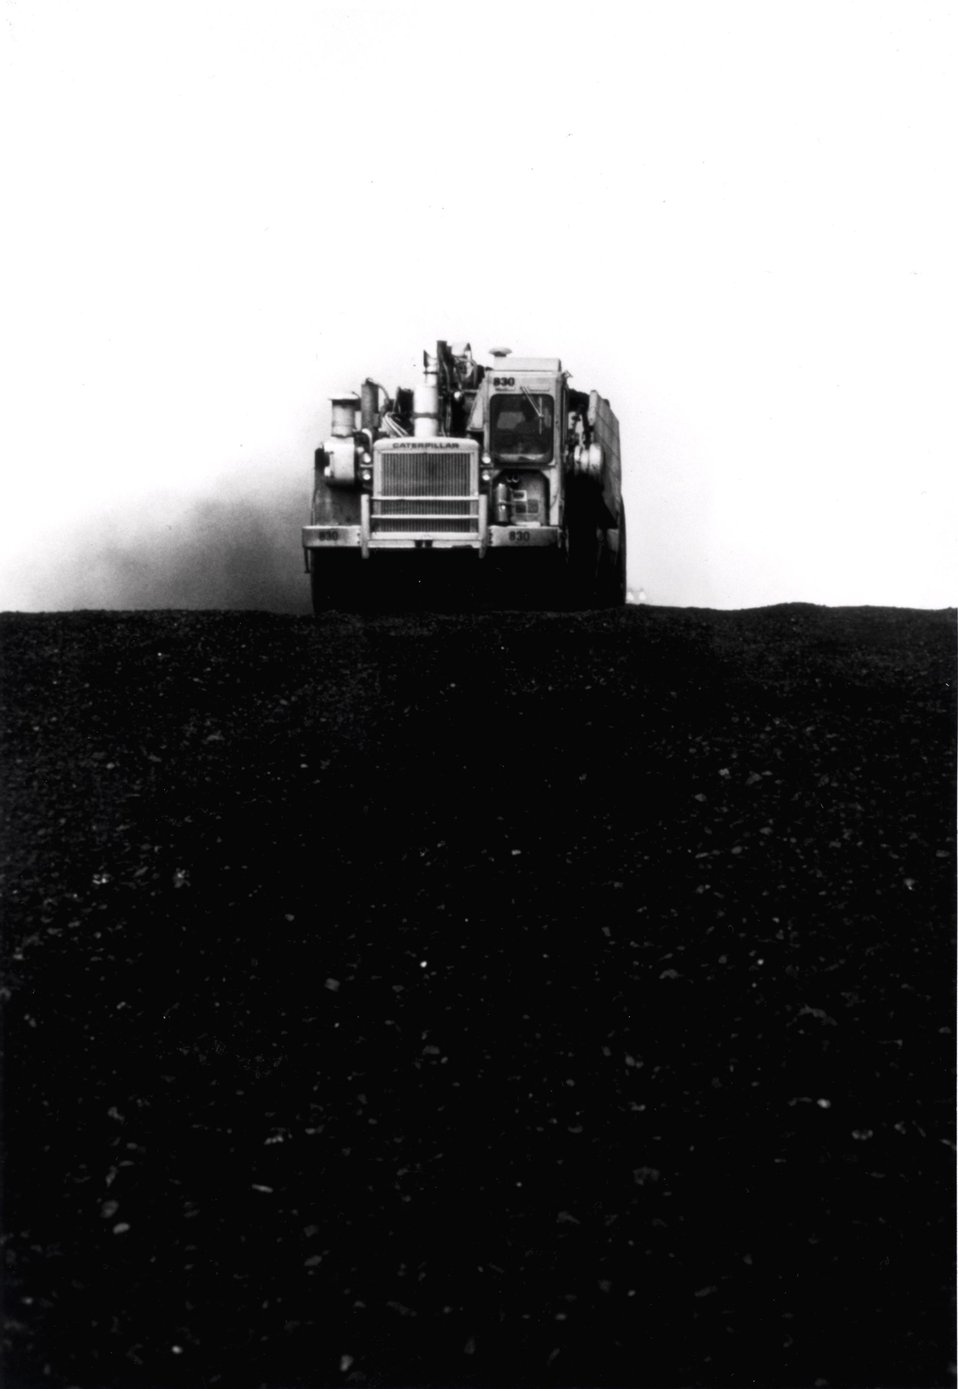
Abundant coal supply at Monroe, Michigan must be moved by massive equipment such as this scraper. c. 1979